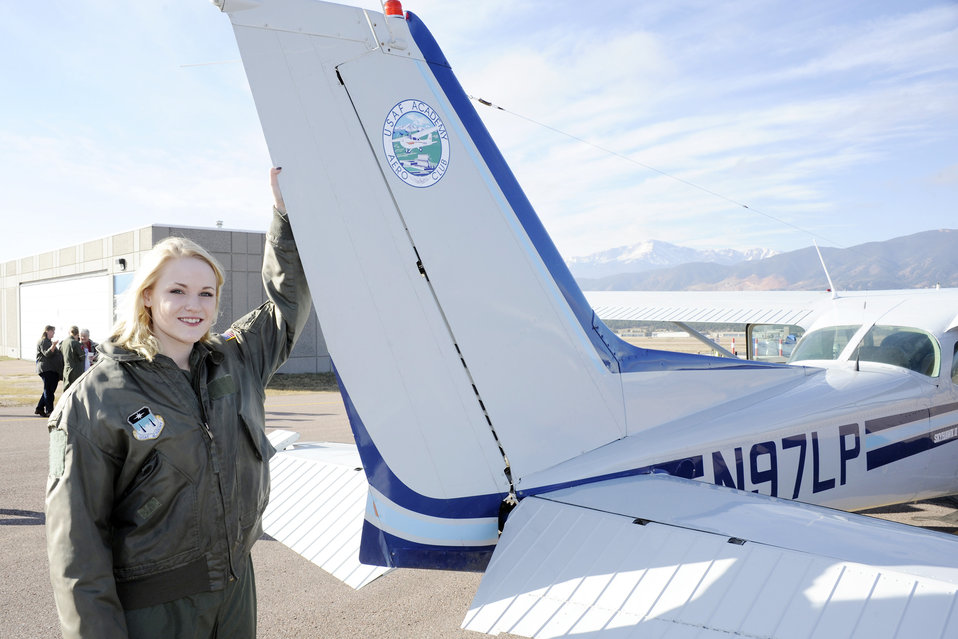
Cadet for a day

Hannah Marklin of Parker, Colo., stands beside a U.S. Air Force Academy Aero Club Cessna before her orientation flight Nov. 13, 2009. She was visiting the Academy as